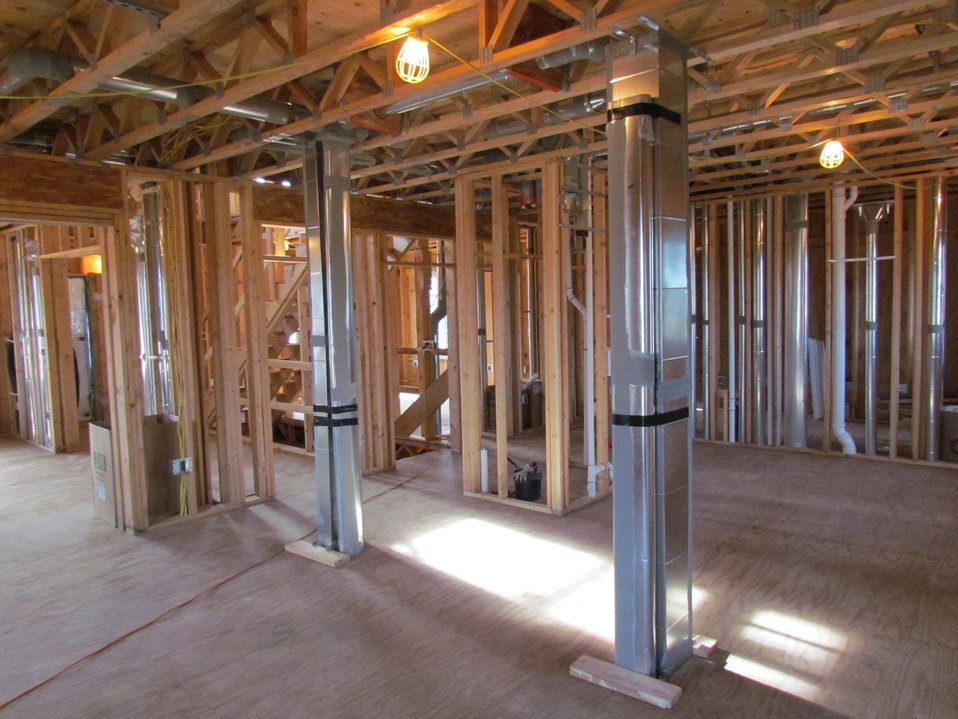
Net-Zero Energy Residential Test Facility – Photo showing duct work in kitchen/dining room area. The square ducts will be covered with drywall and appear as columns separating the two rooms.